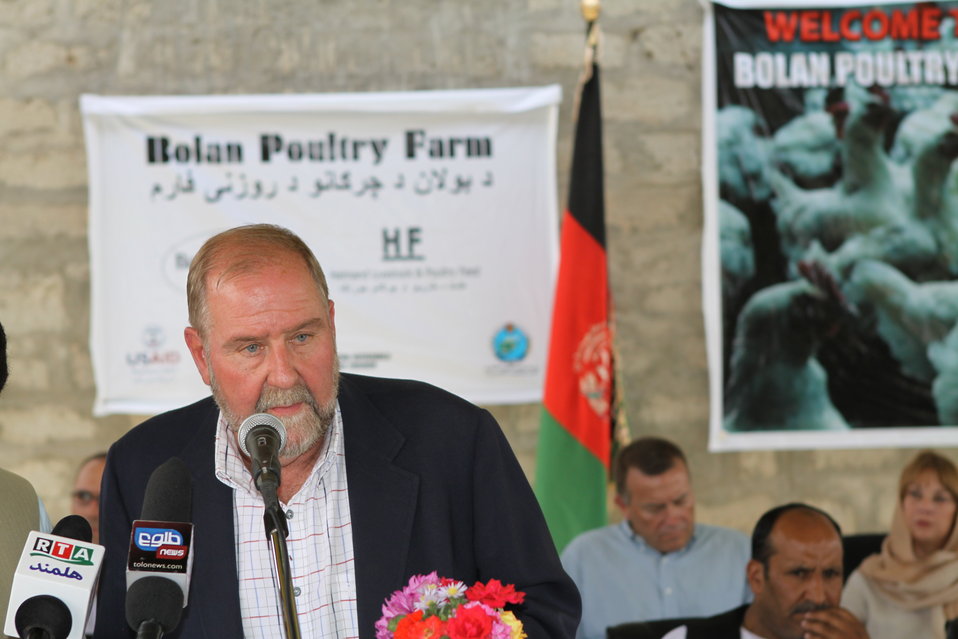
Bolan Poultry Farm